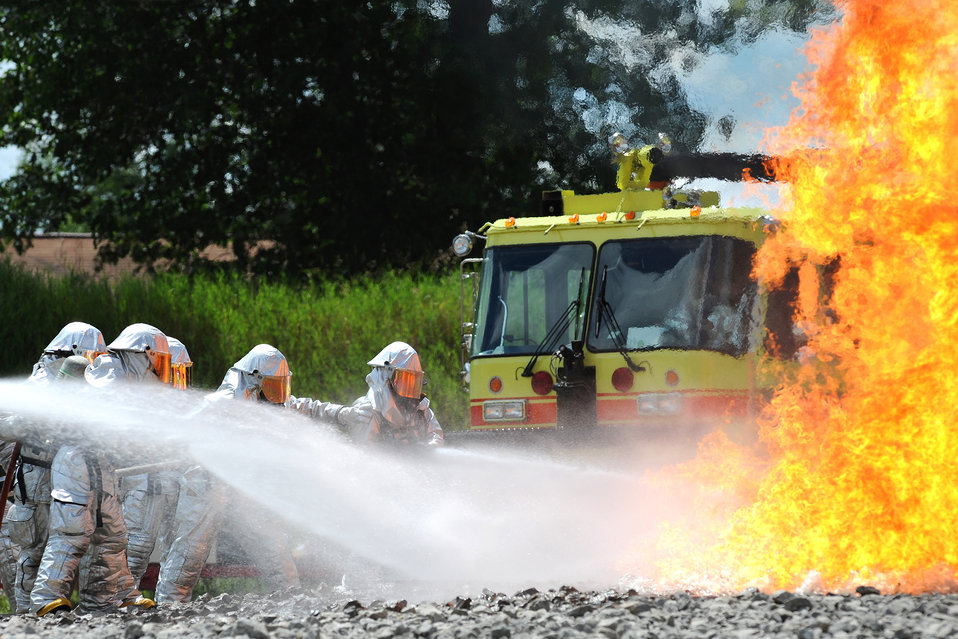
Guard firefighters train for emergencies

Firefighters battle a roaring fire while participating in a a live fire response exercise at the Combat Readiness Training Center July 21, 2010, in Alpena, Mich. The firefighters are with the Michigan Air National Guard's 127th Wing at Selfridge Air National Base.